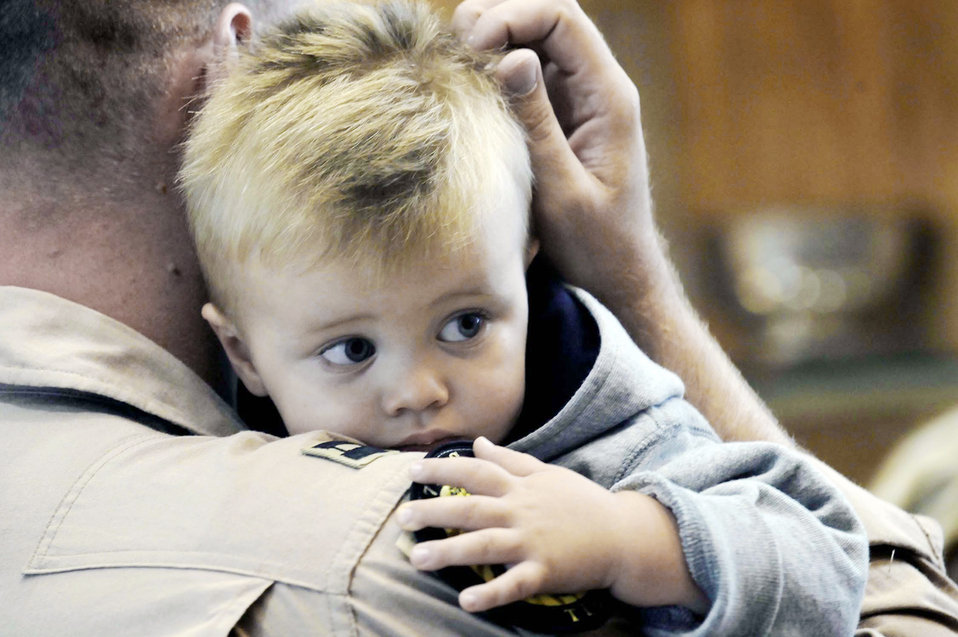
I'll be back soon

A weapons systems officer assigned to the 37th Bomb Squadron holds his son before deploying July 21 from Ellsworth Air Force Base, S.D. Airmen representing various specialties deployed in support of operations at the 379th Air Expeditionary Wing in Southwest Asia.